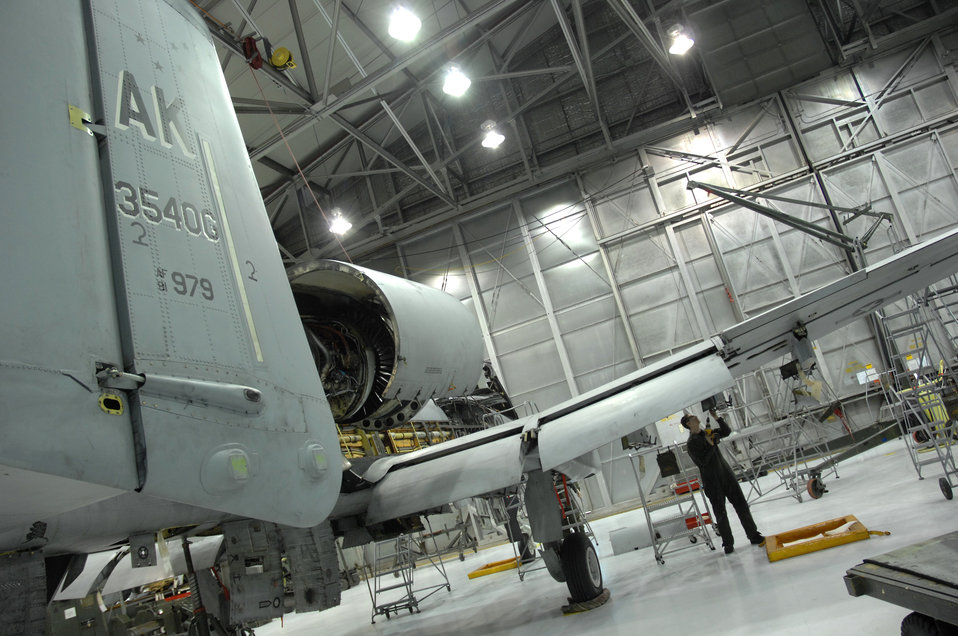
It's just a phase they're going through

Airman 1st Class Mitchell Guy removes a leading edge panel on an A-10 Thunderbolt II March 13 during phase maintenance at Eielson Air Force Base, Alaska. During phase maintenance, Airmen overhaul the entire aircraft to ensure it is ready for safe flight. Airman Guy and the other maintainers in the 345th Aircraft Maintenance Squadron can turn an A-10 around in 10 days.